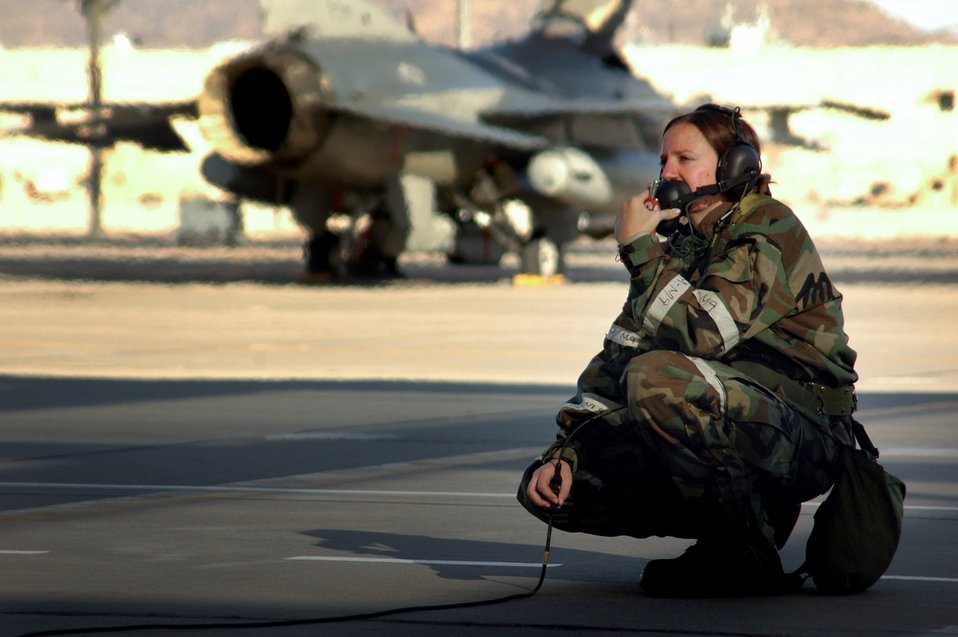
All systems go!

Crew chief Senior Airman Marci Salmon talks to an F-16 Fighting Falcon pilot using the ground communication headset as part of a pre-flight check Nov. 2 at Kirtland Air Force Base, N.M. The pre-flight check is run to ensure the aircraft is ready to take off.